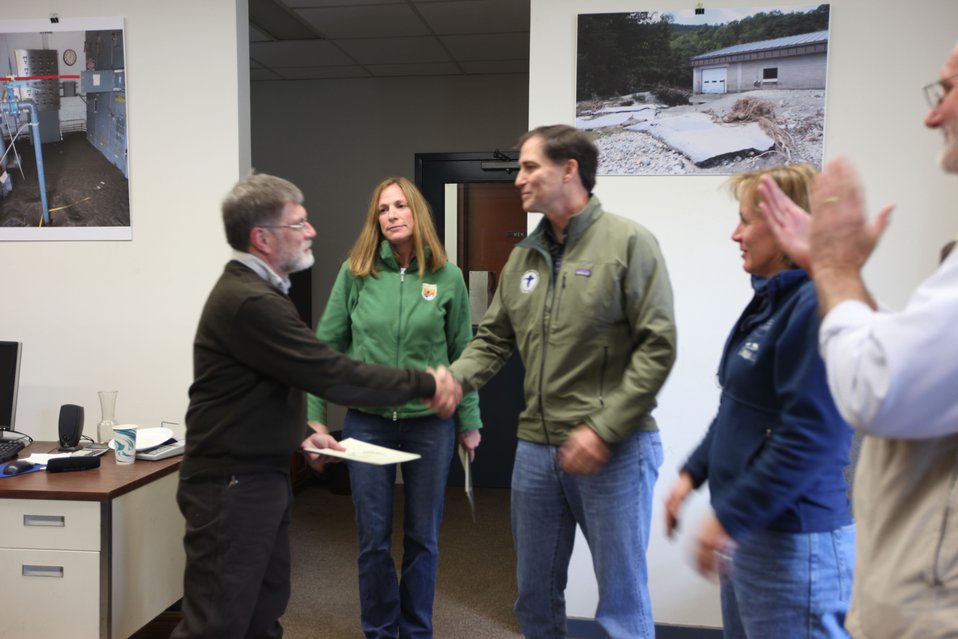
Director Ashe gives Ken Gillette an award

U.S. Fish & Wildlife Service Director Dan Ashe visits the Northeast Region
for a tour of the White River National Fish Hatchery in Bethel, Vermont on
April 27, 2012. The hatchery was devastated by Tropical Storm Irene and
Dan Ashe had the chance to meet and thank the staff for their heroic work.
Director Ashe also visited restoration/flood response/fish passage project
sites in Rochester, Vermont and met with local officials and staff from the
White River Partnership.